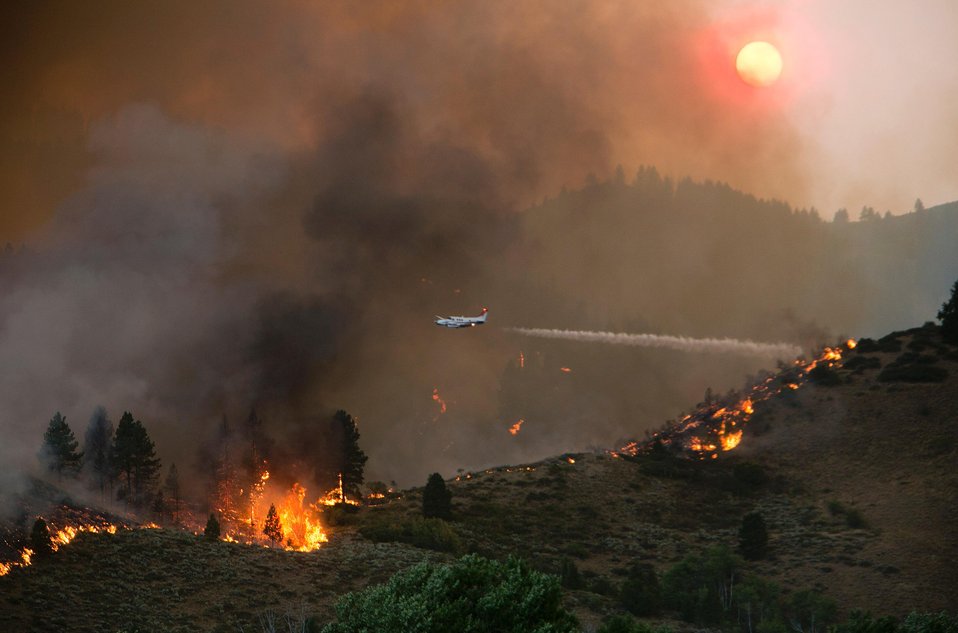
An aircraft makes a water drop on lower Pine Road at the Elk Complex Fire. The Elk Complex Fire in the Boise National Forest near Pine, ID began on Aug. 08, 2013 by lightning has consumed approximately 98,413 acres and is approximately 5% contained.